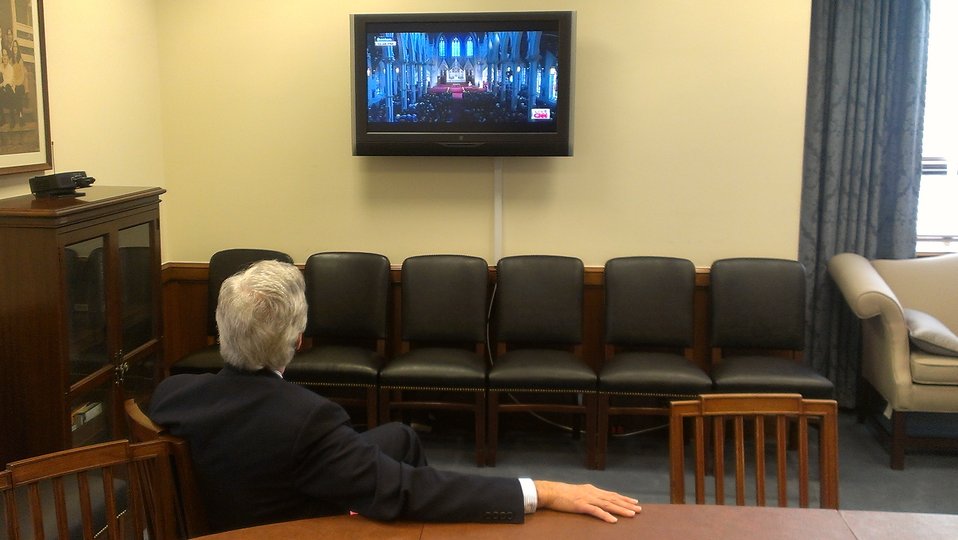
Secretary Kerry Watches Boston Marathon Memorial Service

U.S. Secretary of State John Kerry watches the memorial for the victims of the Boston Marathon bombing during a break in budget testimony on Capitol Hill, April 18, 2013.